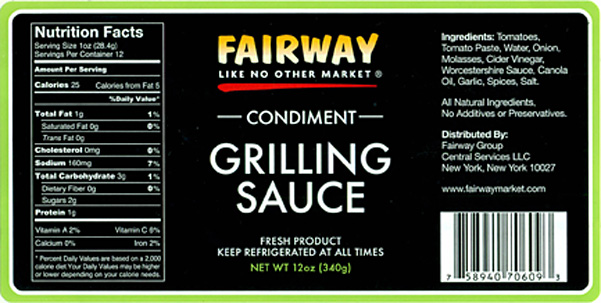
RECALLED - Wolfgang B. Gourmet Foods, Inc. Issues Allergy Alert on Undeclared Fish (Anchovies) in Two Lots Of Fairway Brand Condiment Grilling Sauce

February 21, 2014 – Product Recall – Wolfgang B. Gourmet Foods, Inc. of Catskill, NY, is voluntarily recalling approximately 236 units of FAIRWAY brand CONDIMENT GRILLING SAUCE, NET WT. 12 oz., UPC 758940706093, because it contains undeclared fish (anchovies).